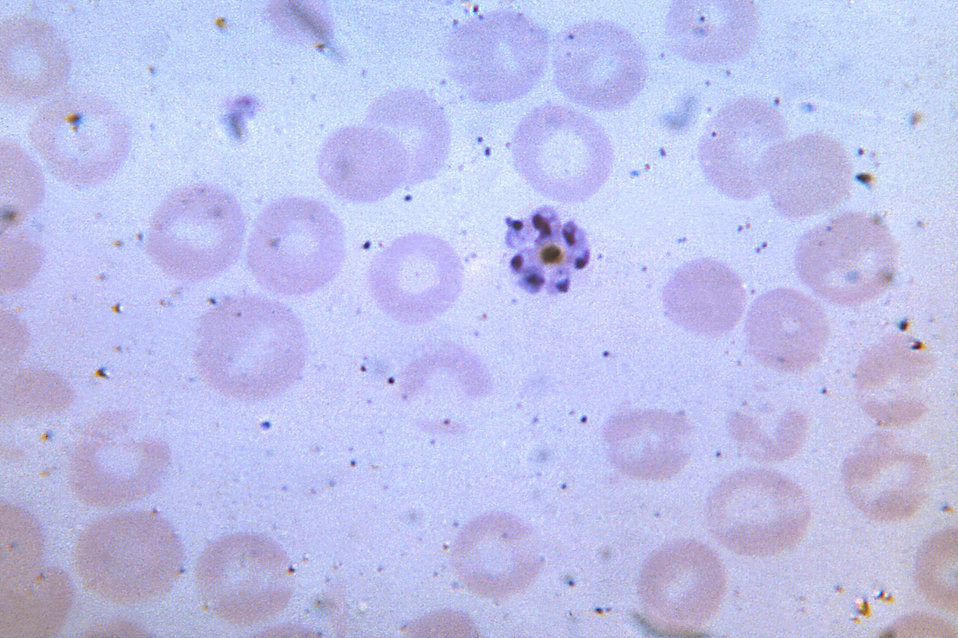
This thin film micrograph shows a mature P. malariae schizont containing 8 merozoites, each with invisible cytoplasm.